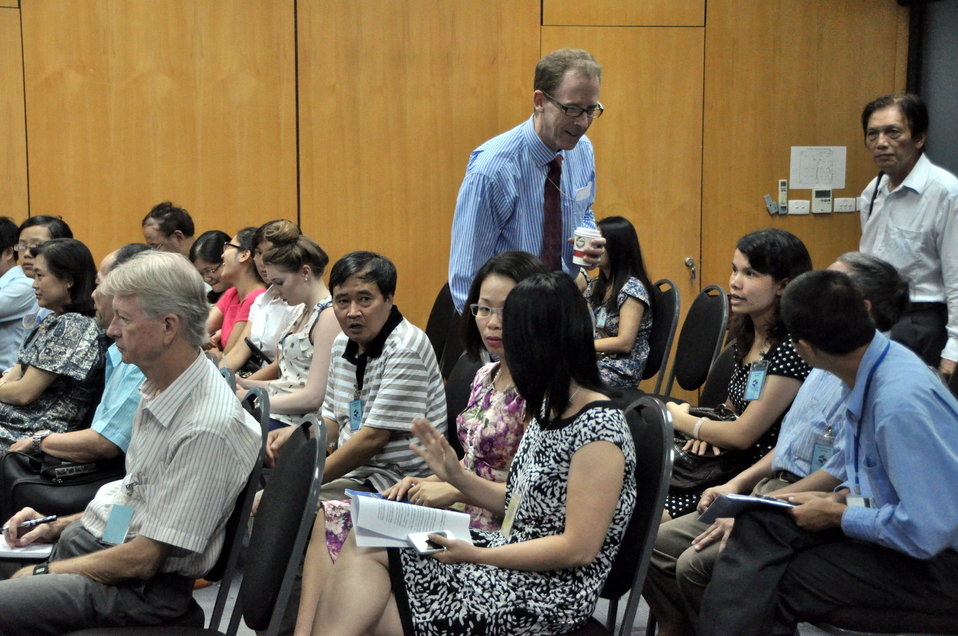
Development Grants Program Workshop in Hanoi

July 24, 2013